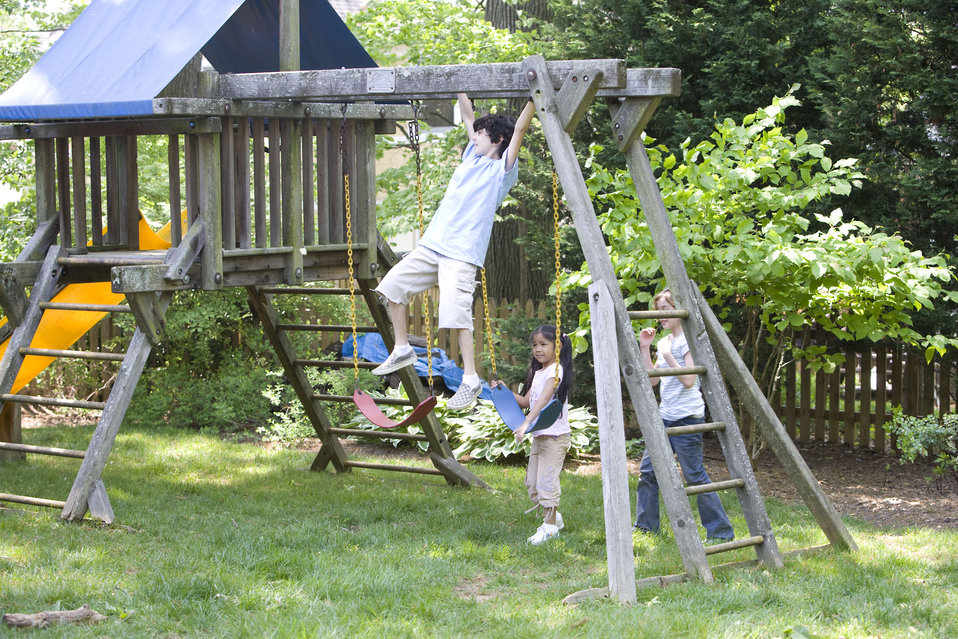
Children love playing outside, and these children were thoroughly enjoying their wooden swing set, and all were having fun in the fresh outdoor air, and the beautiful weather. It's important to note that older wooden playsets may have been treated with arsenic and/or creosote, and therefore, parents need to know if these chemicals were used in their manufacture.